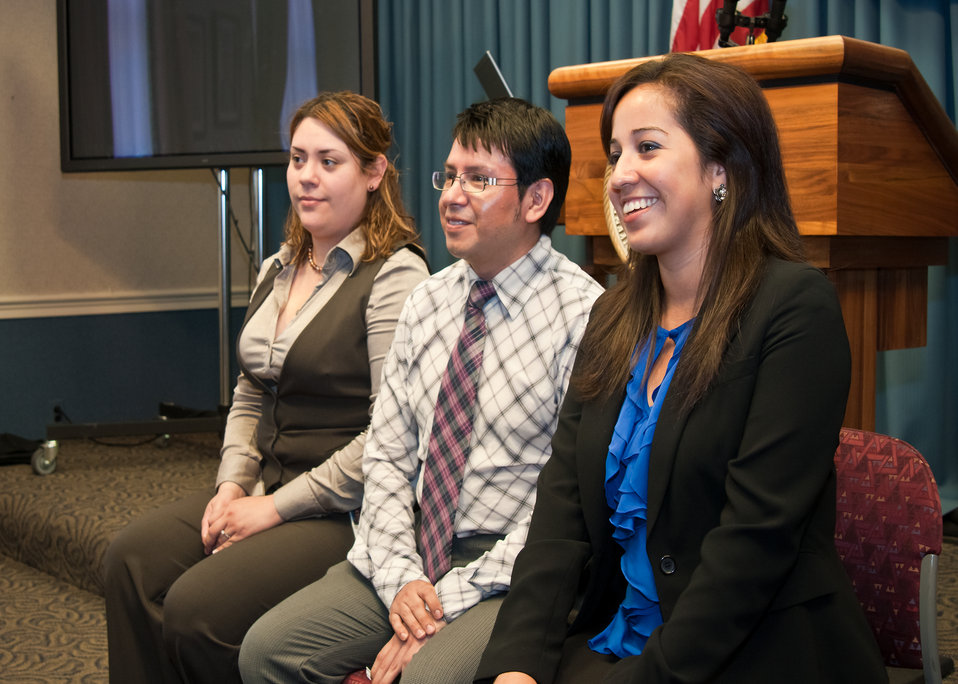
(L to R) Foreign Agriculture Service Branch Chief Paola Felix, Foreign Agriculture Service Agricultural Economist Francisco del Pozo, and Agriculture Office of the Executive Secretariat Program Liaison Specialist Ines Lucio explain their experiences and offer guidance to interns to make their experiences as valuable as theirs at the United States Department of Agriculture (USDA) Hispanic Association of Colleges and University (HACU) and Tribal College summer intern program during their orientation at USDA in Washington, DC, Monday, Jun. 6, 2011. The HACU/Tribal College National Internship Program represents more than 400 colleges and universities committed to higher education in the U.S., Puerto Rico, Latin America, Spain and Portugal and places student interns each year with federal agencies in Washington, DC or in field offices around the country.